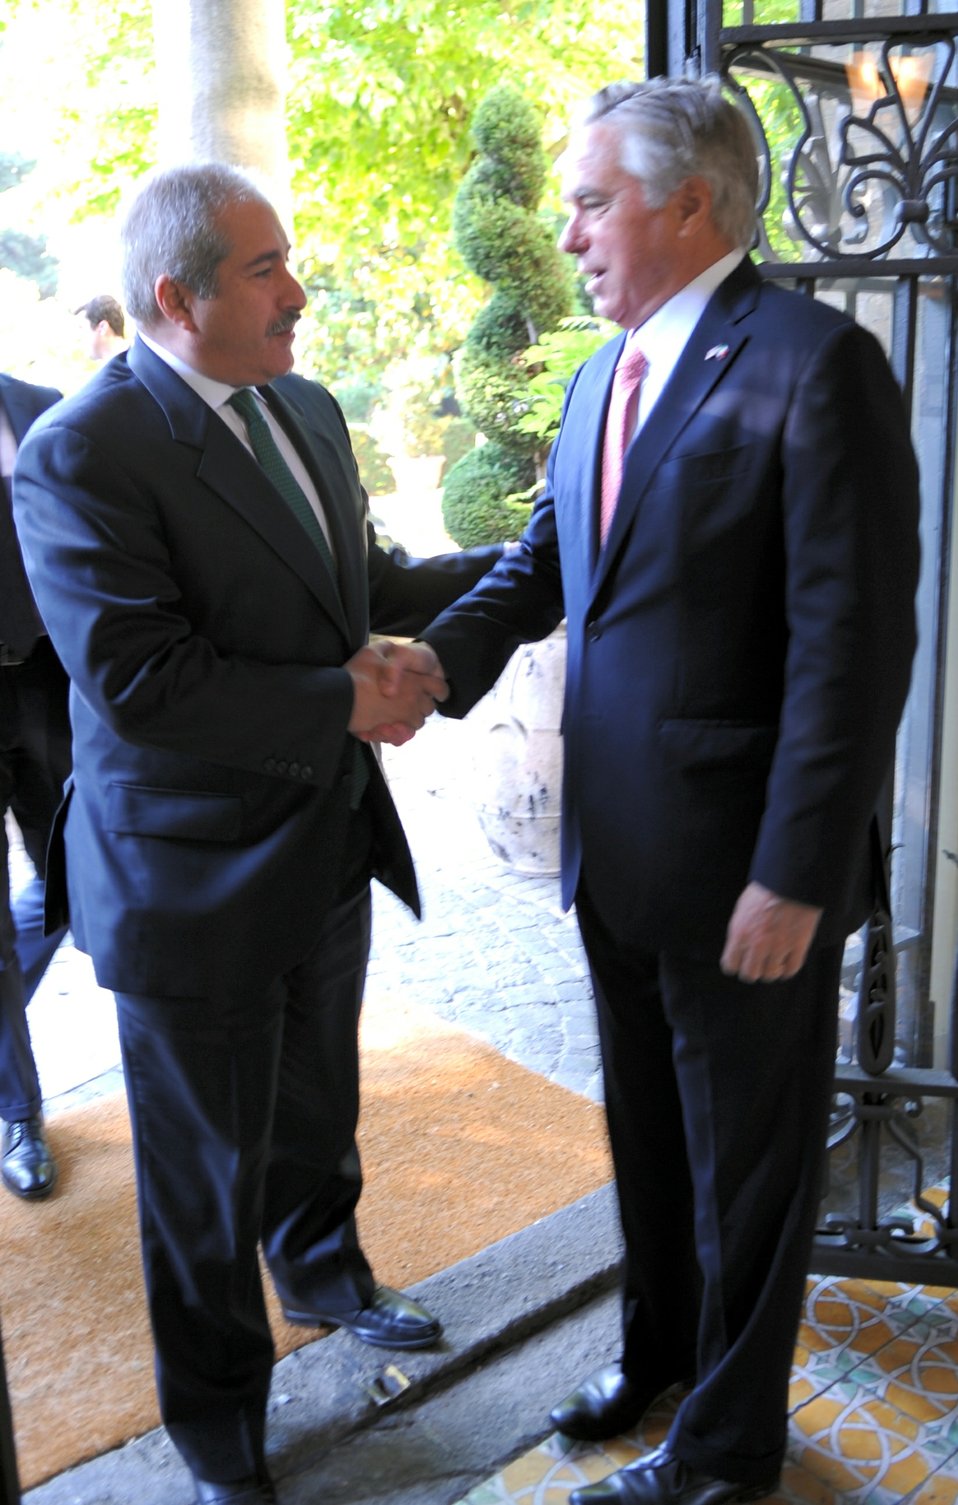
Ambassador Thorne Greets Jordanian Foreign Minister Judeh

U.S. Ambassador to Italy David Thorne welcomes Jordanian Foreign Minister Nasser Judeh to Villa Taverna, the U.S. ambassador's residence in Rome, Italy, on May 9, 2013.